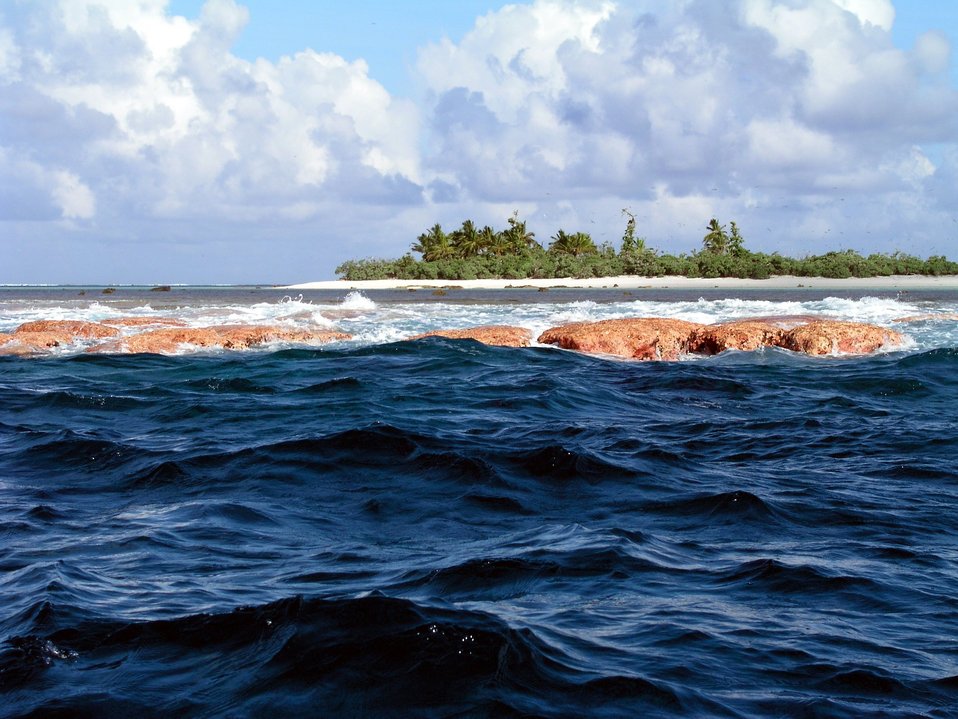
Reef line exposed at low tide at Rose Atoll